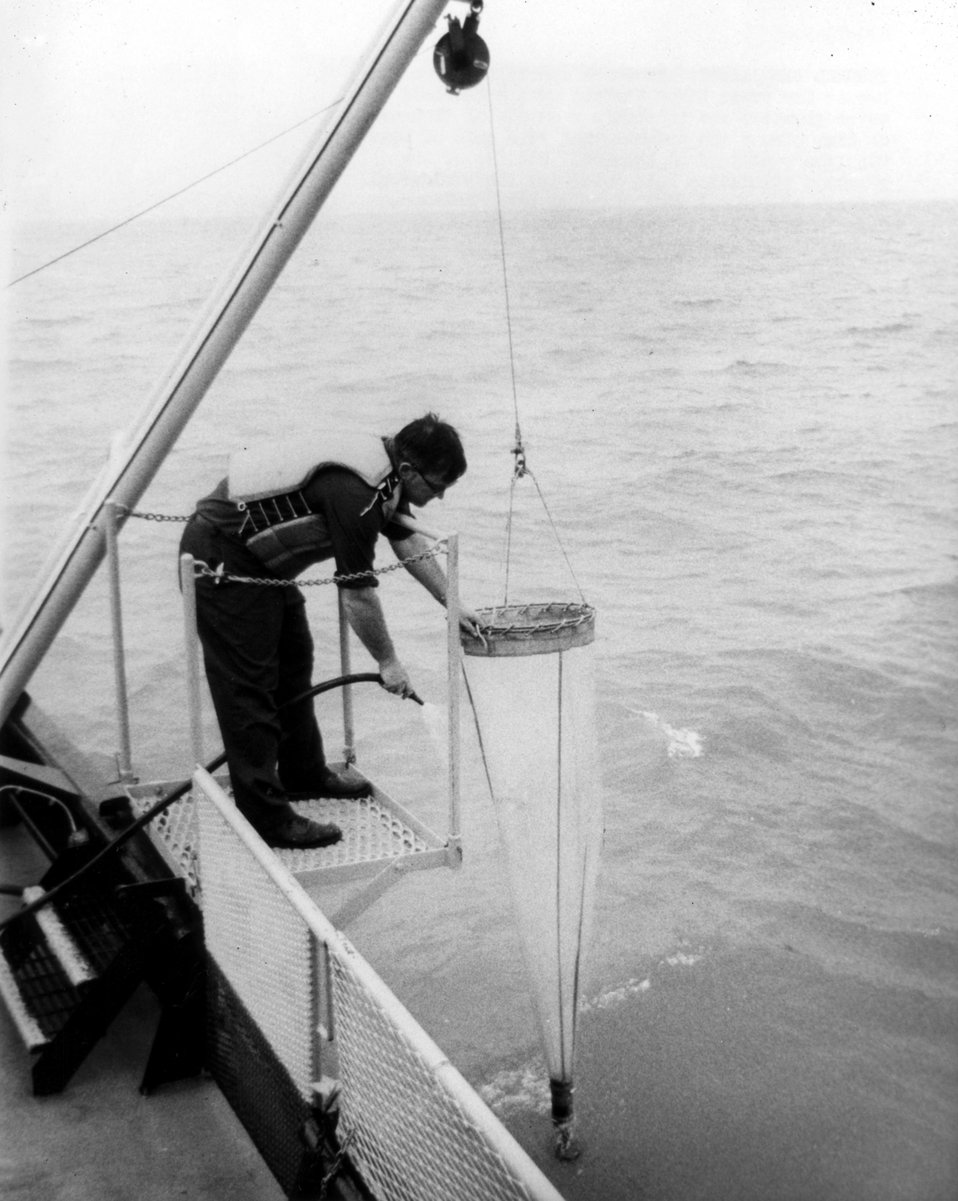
Research specialist from the Center for Great Lakes Studies uses a one-half water plankton meter to obtain a sample of thousands of tiny plants and animals that from part of Lake Michigan's ecological balance.
c.1972